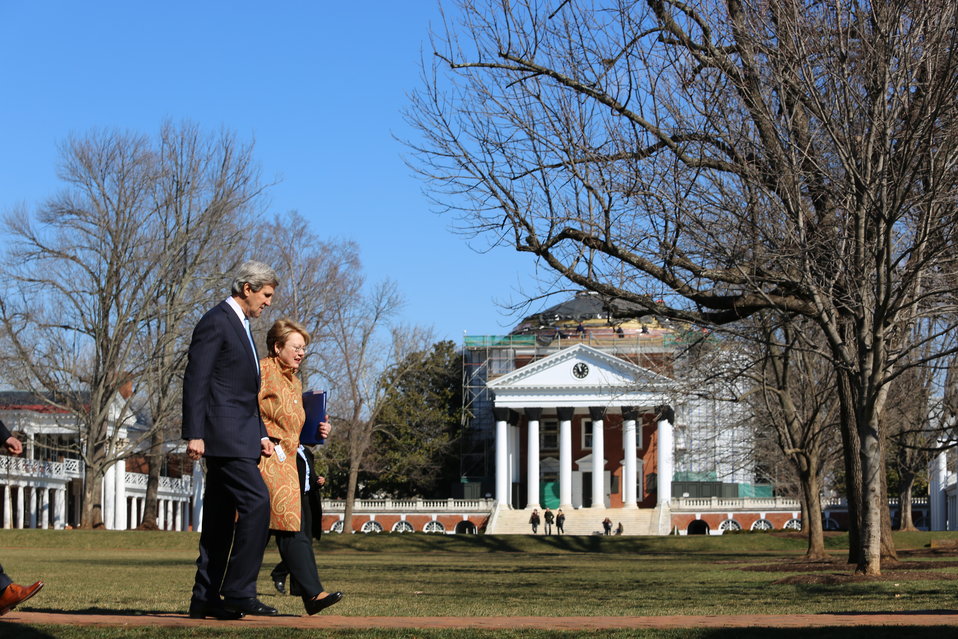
Secretary Kerry Walks With UVA President Sullivan

U.S. Secretary of State John Kerry is welcomed to the University of Virginia by University President Teresa Sullivan in Charlottesville, Virginia, February 20, 2013.